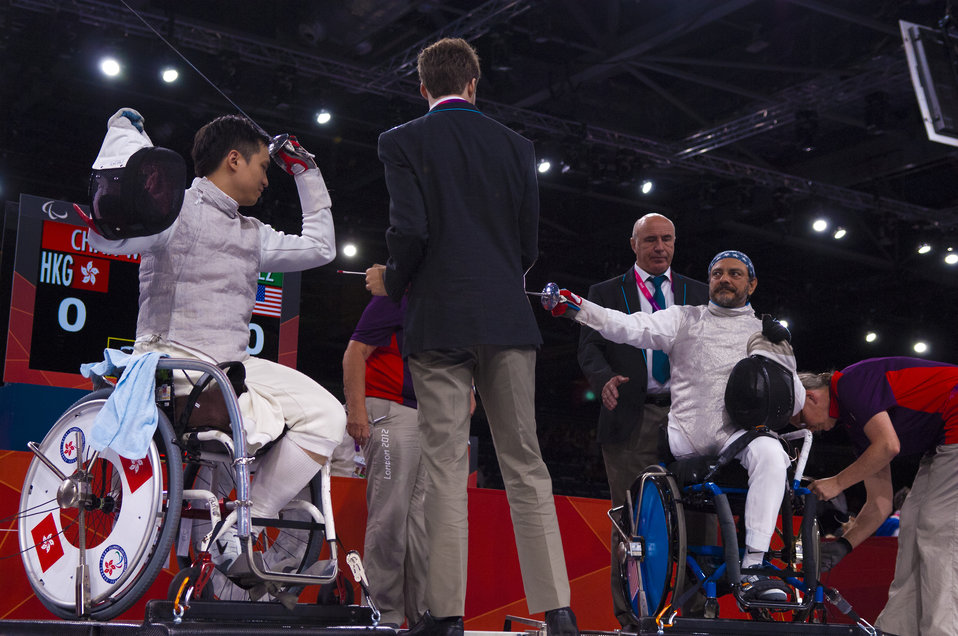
af veteran fencer

Former Air Force Staff Sgt. Mario Rodriguez, right, a member of the 2012 U.S. Paralympic fencing team, prepares to enter a bout with Wing Kin Chan of Hong Kong as officials measure the distance between the two athletes at London's ExCel Centre during the Paralympic Games, Sept. 4, 2012.